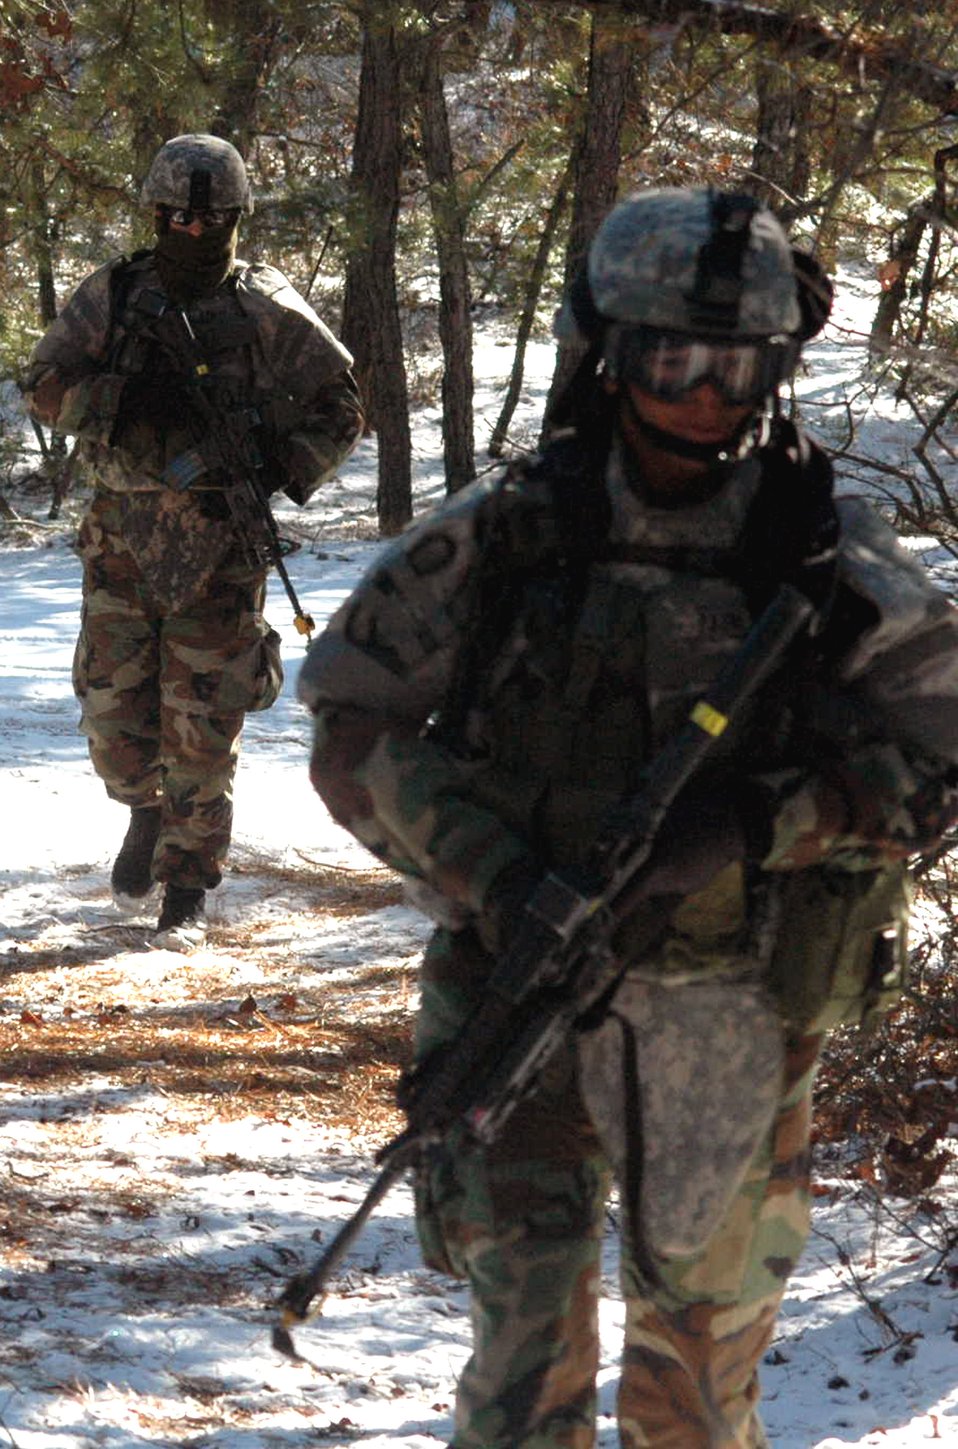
Air Force tactical security element training

Students in the tactical security element training course practice a dismounted patrol during training on a range on Fort Dix, N.J. The course, held in early December, was the first of its kind by the U.S. Air Force Expeditionary Center at Fort Dix. Taught by instructors from the Air Force Office of Special Investigations and a security forces cadre from the center's 421st Combat Training Squadron, the training is designed to prepare security forces for